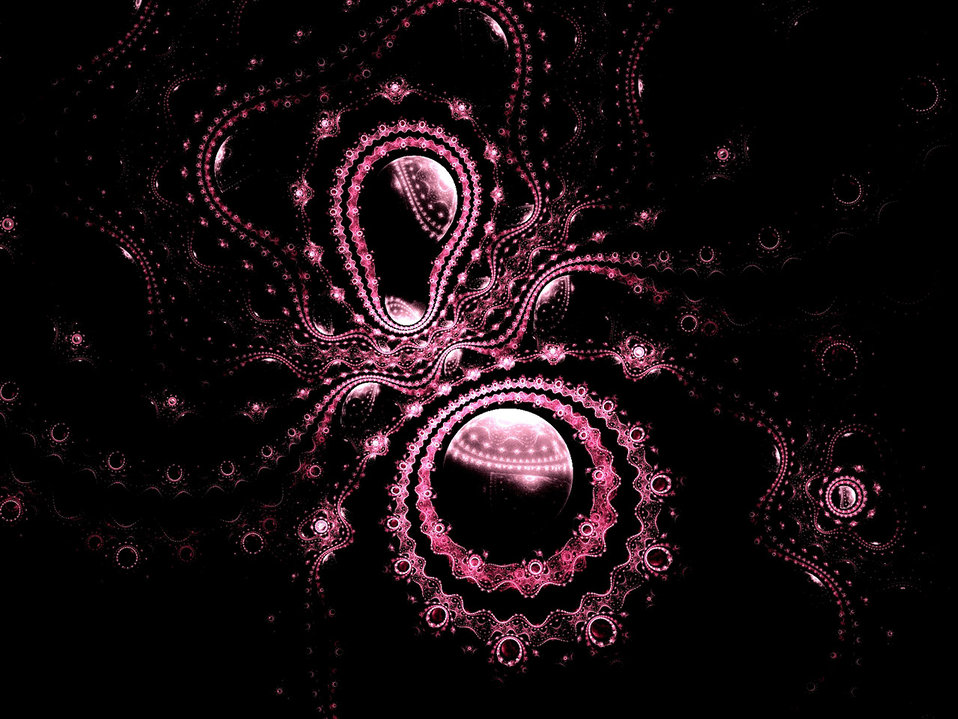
Pink fractal

A pretty pink fractal.